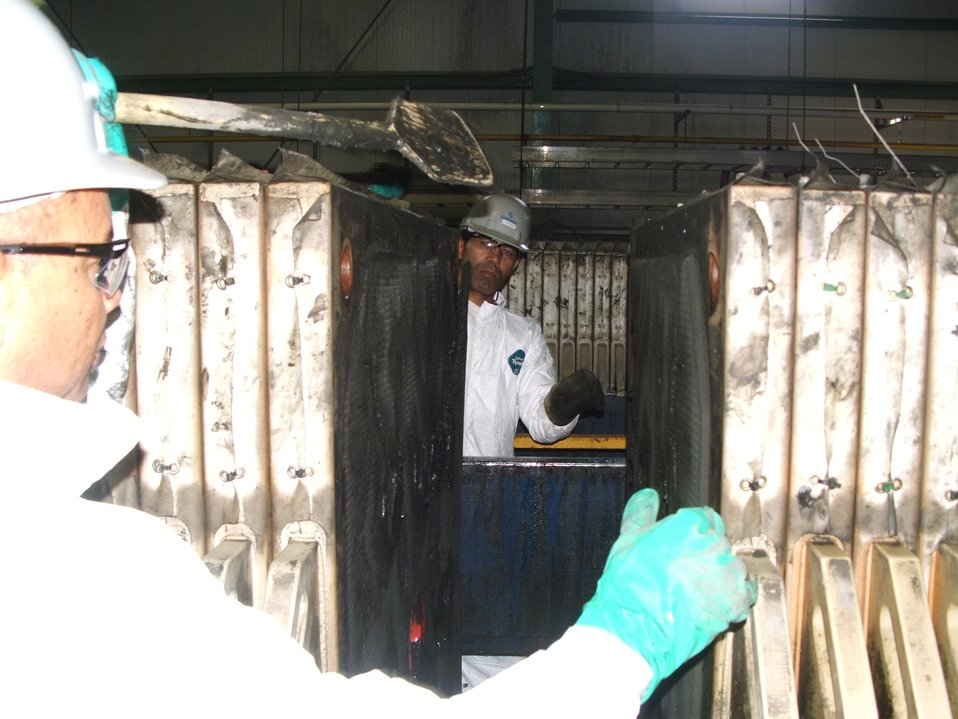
August 2012, Local crew empty filter presses, New Bedford Harbor cleanup

In this photo local members of the project crew pull filter press plates at EPA's de-watering facility in New Bedford, MA. This is done to empty what is left in the presses onto a conveyor below, after the water is removed from dredged harbor sediment. The final material is then loaded into trucks for off-site, licensed disposal. (Rail cars were not used this cleanup season).